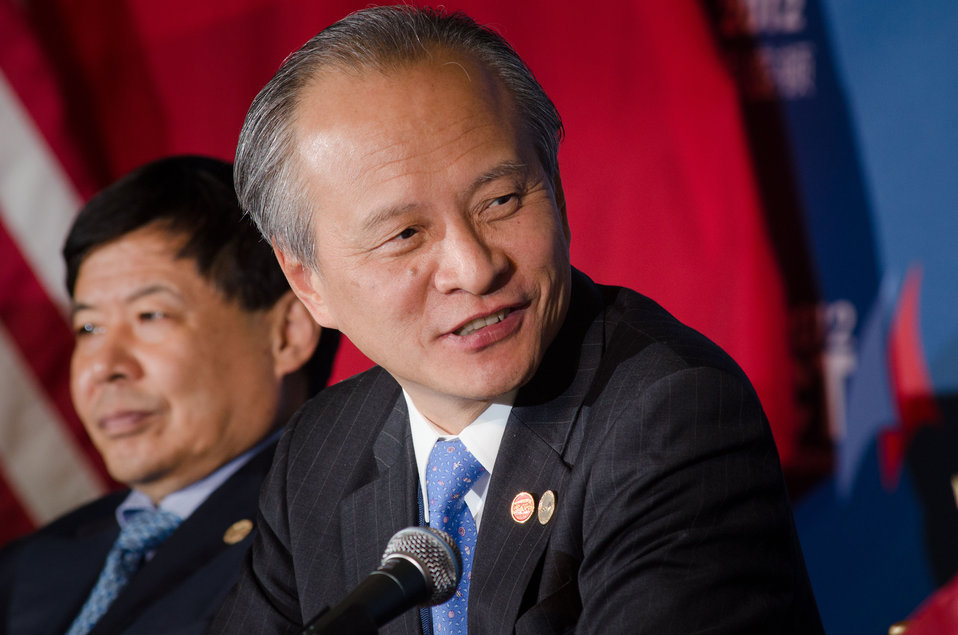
China's Vice Foreign Minister Cui Tiankai answers a question from international news media journalists at the 23rd Session of the U.S. China Joint Commission on Commerce and Trade (JCCT) press conference at the Andrew W. Mellon Auditorium in Washington, D.C. on Wednesday, Dec. 19, 2012. The JCCT holds high-level plenary meetings on an annual basis to review progress made by working groups that focus on a wide variety of trade issues. These working groups meet throughout the year to address topics such as intellectual property rights, agriculture, pharmaceuticals and medical devices, information technology, tourism, commercial law, environment, and statistics.